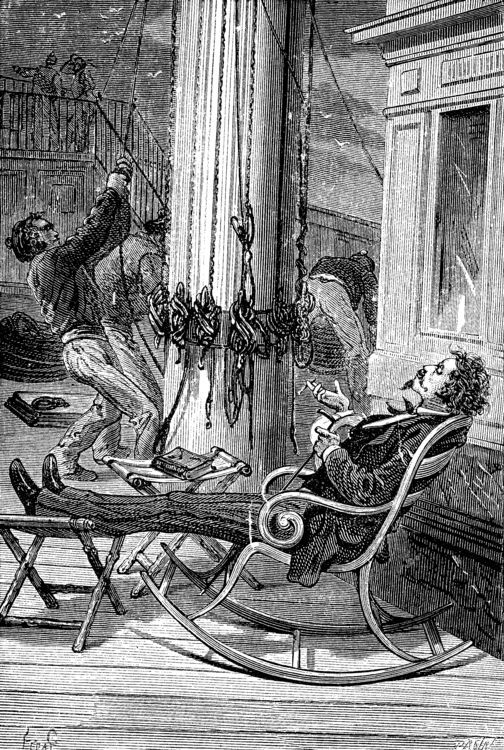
An illustration from Jules Verne's novel 'A Floating City' (1869) drawn by Jules Férat. Polski: Ilustracja powieści Juliusza Verne'a 'Pływające miasto' (1869) autorstwa Julesa Férata. Français : Jules Verne: 'Une Ville flottante' (1869), dessins par Jules Férat. Orginal text: Français : Regardant monter l’orage.